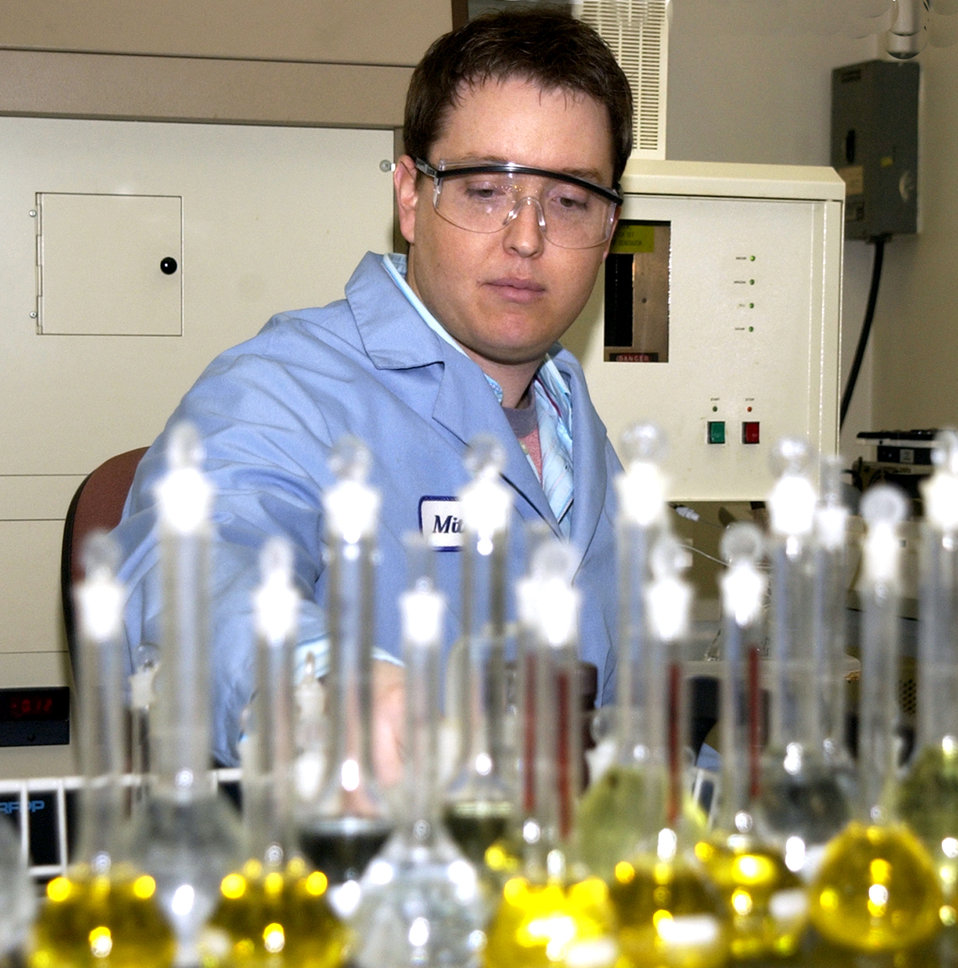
Hill employees get down to details

HILL AIR FORCE BASE, Utah -- Mitch Smolcha, a chemist, works in the plasma lab analyzing samples of industrial waste for harmful levels of metal.